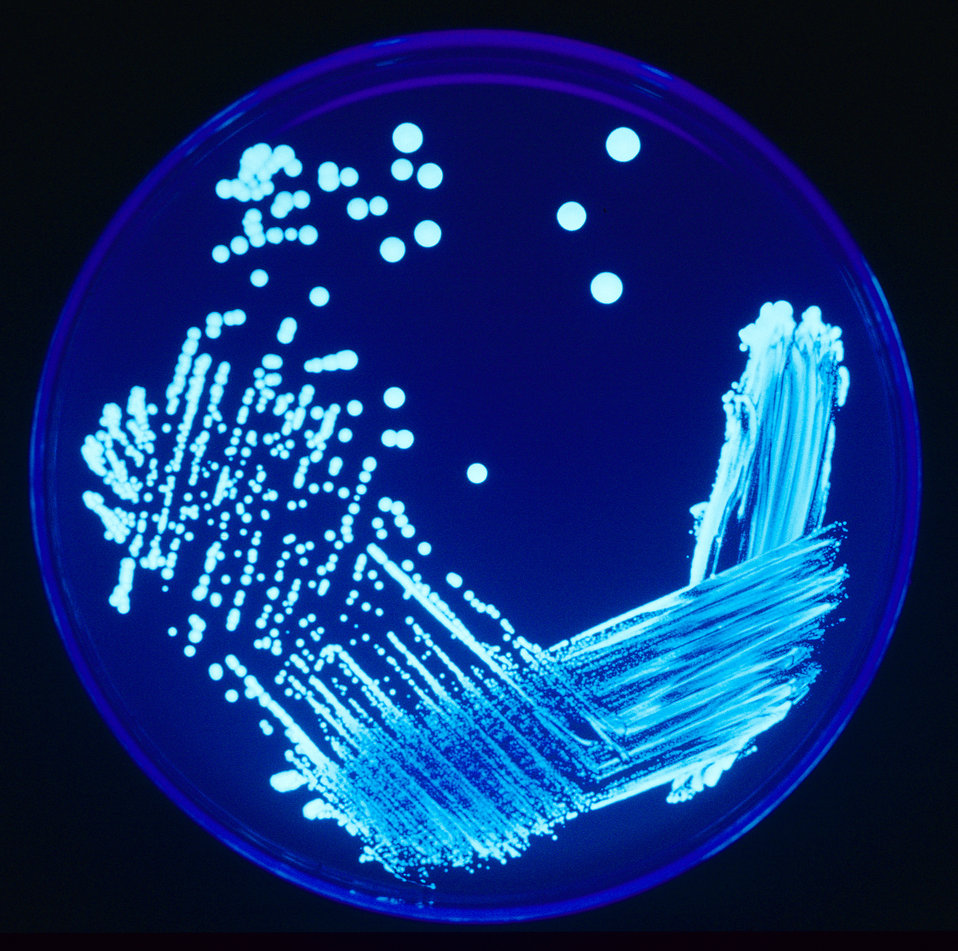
This 2005 photograph shows numbers of Legionella sp. colonies, which had been cultivated on an agar cultured plate, and illuminated using ultraviolet light.